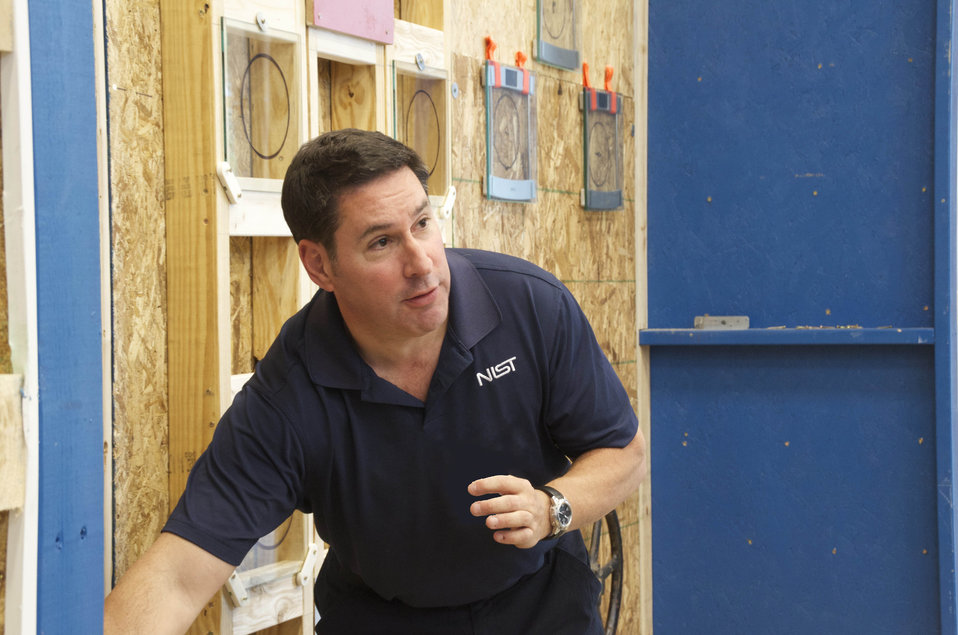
NIST robotics research engineer Adam Jacoff points out specific features of the test methods in the Robot Test Facility. The test methods in the facility present robots with challenges similar to those they would encounter in an emergency or disaster.

Development of test methods at the NIST Robot Test Facility is funded in part by the NIST Office of Law Enforcement Standard's Counterterrorism and Response Technologies program.